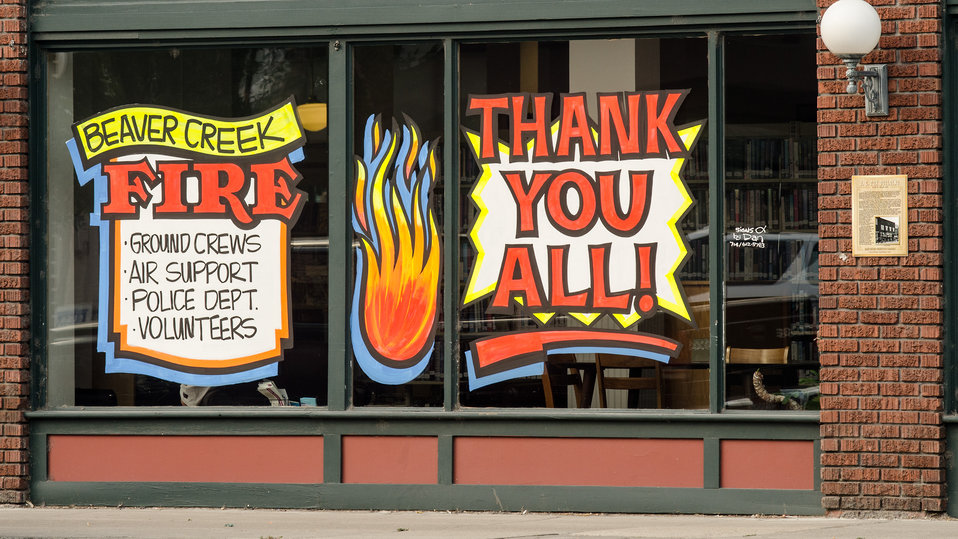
Signs of support posted by residents and businesses are seen throughout the Beaver Creek Fire Area, in Hailey (seen here), Sawtooth National Forest and Bureau of Land Management lands, on Wednesday, Aug 21, 2013.